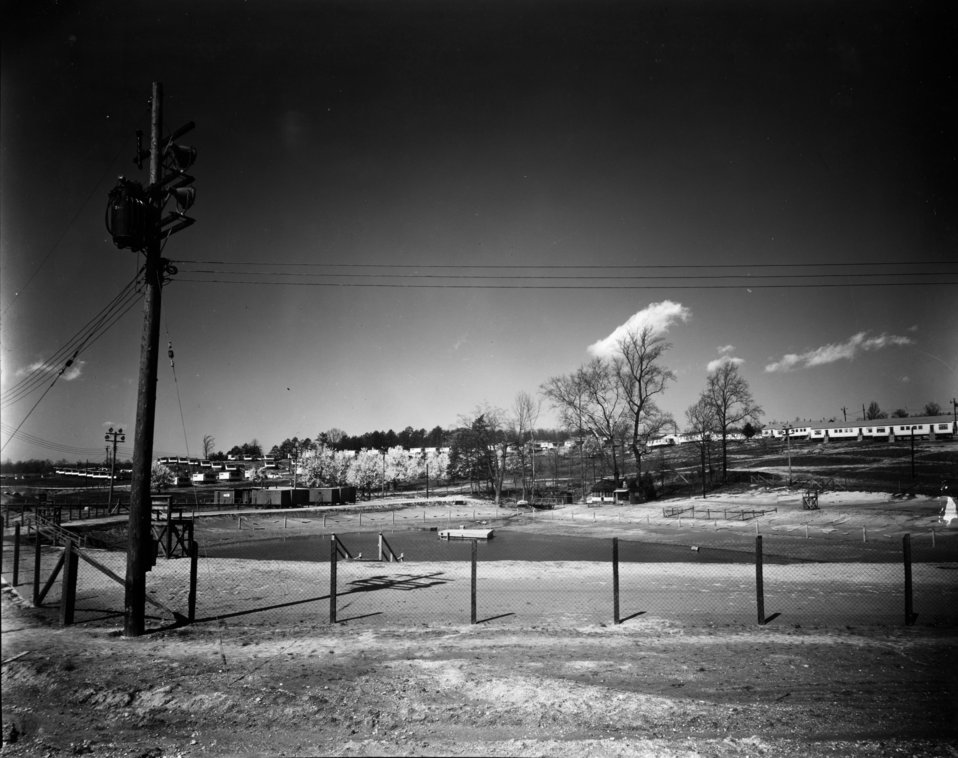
Recreation at Oak Ridge